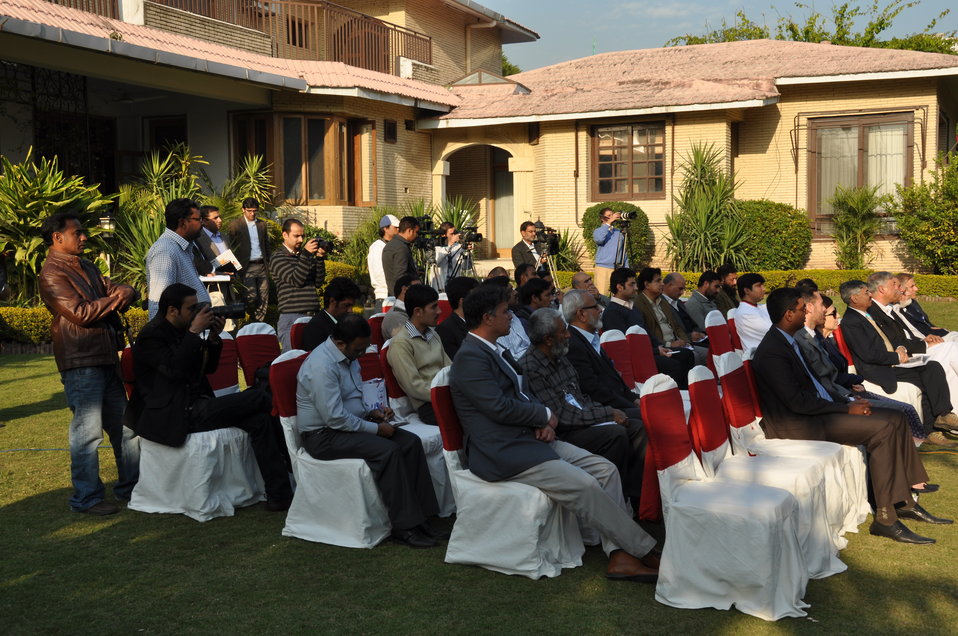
United States Government Strengthens PESCO Field Operations 13